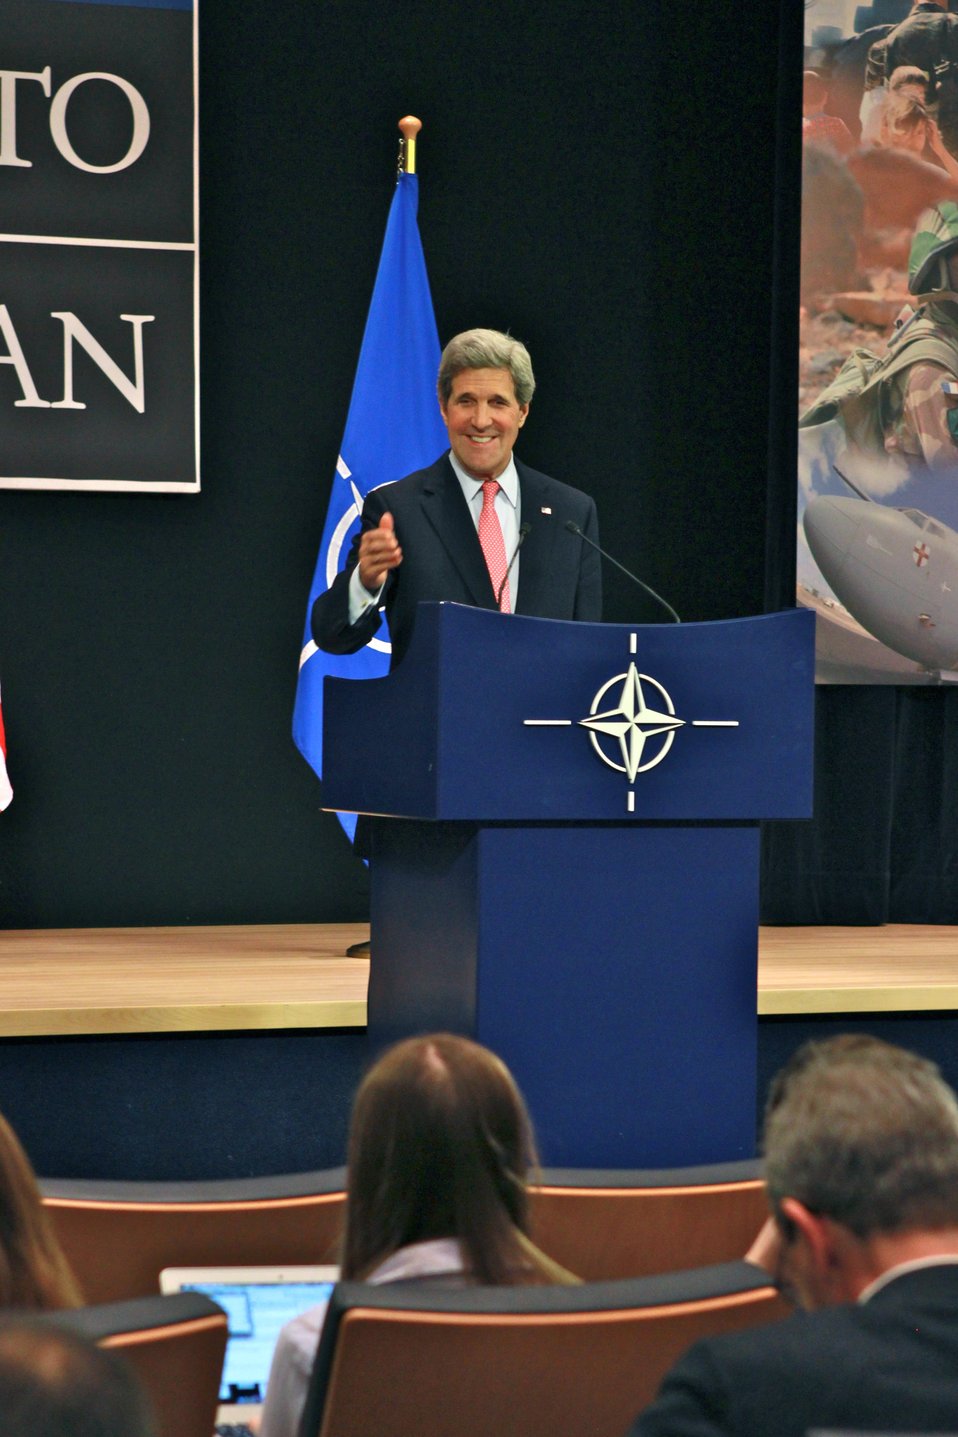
Secretary Kerry Holds a Press Conference at NATO Foreign Ministerial

U.S. Secretary of State John Kerry holds a press conference at the NATO Foreign Ministerial in Brussels, Belgium, on April 23, 2013.